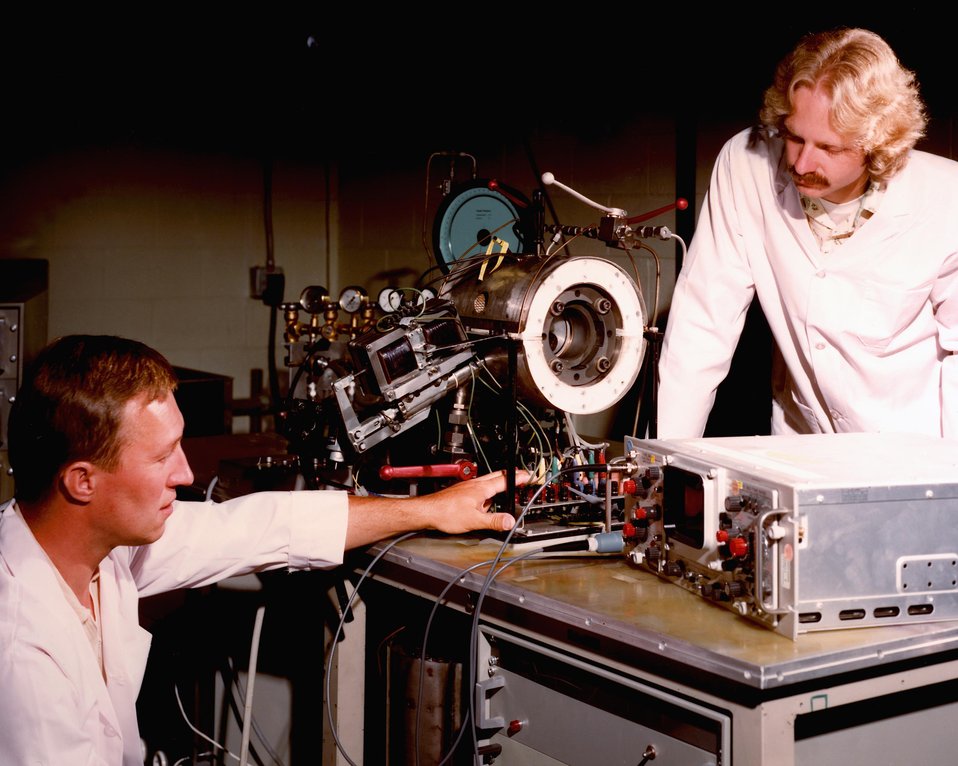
ENGINEERS ASSEMBLING VW'S COMBUSTION BOMB (STRATIFIED CHARGE COMBUSTION CHAMBER SIMULATOR).

SCIENTISTS USE ADVANCED LASERS AND COMPUTERS AT THE 50,000 SQUARE FOOT, FOUR-BUILDING COMBUSTION RESEARCH FACILITY TO STUDY EXACTLY HOW AND WHY FUELS BURN. IN THE LABORATORY BUILDING, SPECIAL LASER SYSTEMS WITH BEAMS ARE DISTRIBUTED TO 14 INDIVIDUAL LABORATORIES. EACH LABORATORY IS SERVED BY A MINICOMPUTER WHICH IS CONNECTED TO A CENTRAL DATA SYSTEM. IN ADDITION TO BENCH-TOP FLAME STUDIES, THE FACILITY HOUSES SEVERAL MAJOR COMBUSTION EXPERIMENT LABS, INCLUDING FIVE OPTICALLY PORTED RESEARCH ENGINES, A COMPUTER-CONTROLLED COMBUSTION BOMB, AND LOW-PRESSURE FLAME, COAL FLAME, AND TURBULENT FLAME LABORATORIES. THESE STUDIES COULD LEAD TO THE DESIGN OF HEAT ENGINES AND ENERGY SYSTEMS THAT BURN FUEL MORE EFFICIENTLY WHILE CREATING LESS POLLUTION.